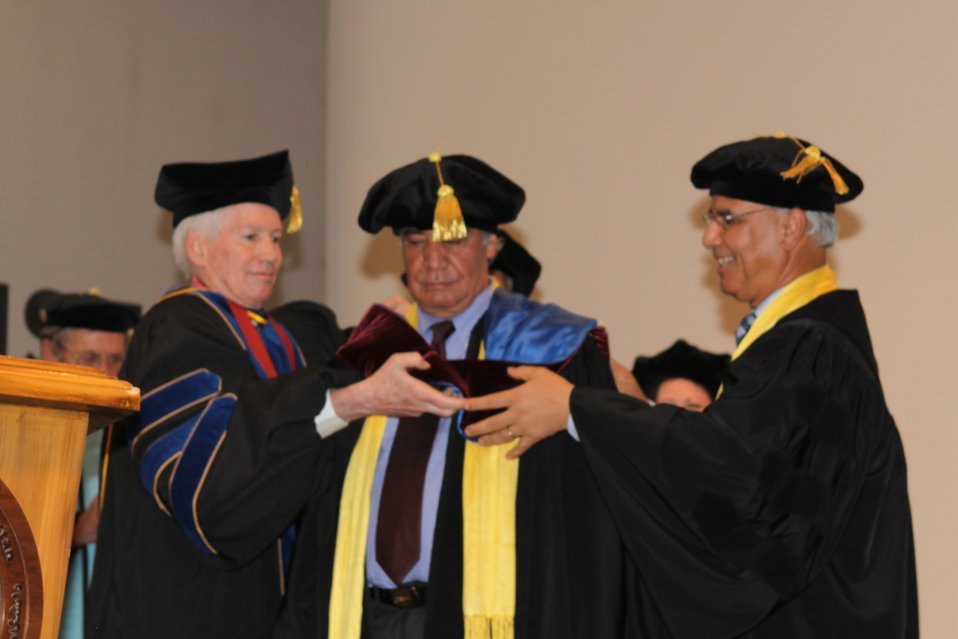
100526 AUAF Graduation 242